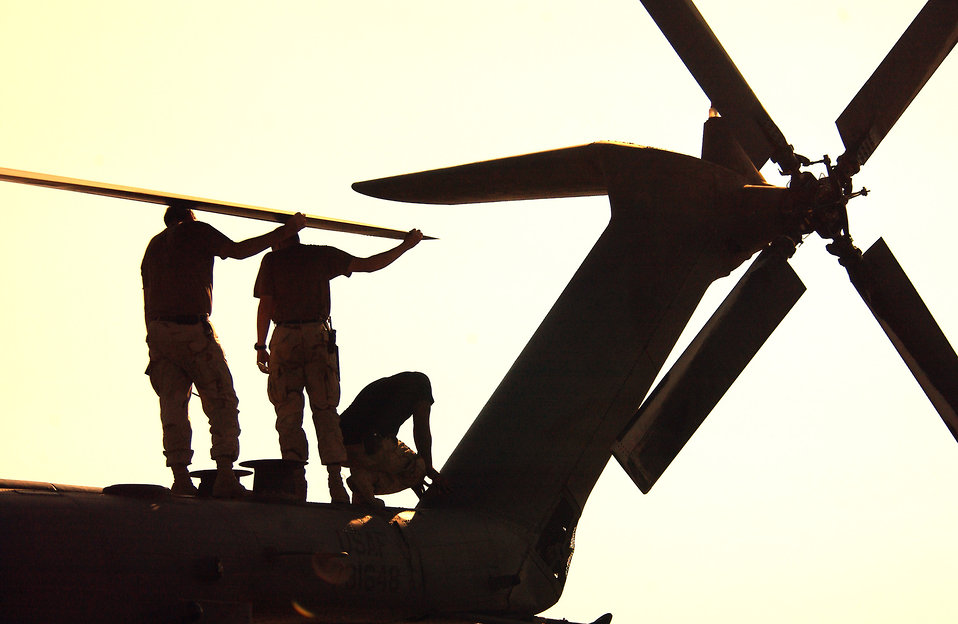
Preflight

DJIBOUTI, Africa -- Master Sgt. Terry Butterfield, a production superintendent, Staff Sgt. Laurence Shaw, a crew chief and Staff Sgt. Francisco Casimirlewis, a sheet metal craftsman from the 16th Helicopter Maintenance Squadron, examine a buckle in the metal frame of a MH-53 helicopter prior to takeoff to perform a mission on Jan. 14, 2003. The 16th HMXS works 24-hours-a-day, 7-days-a-week. The average workday is 12 hours to include mission planning, washing, re-fueling, inspecting, repairing, and servicing all systems of the MH-53 helicopters to maintain mission readiness. Combined Joint Task Force-Horn of Africa service members are deployed to Camp Lemonier here to combat terrorism in support of Operation Enduring Freedom.